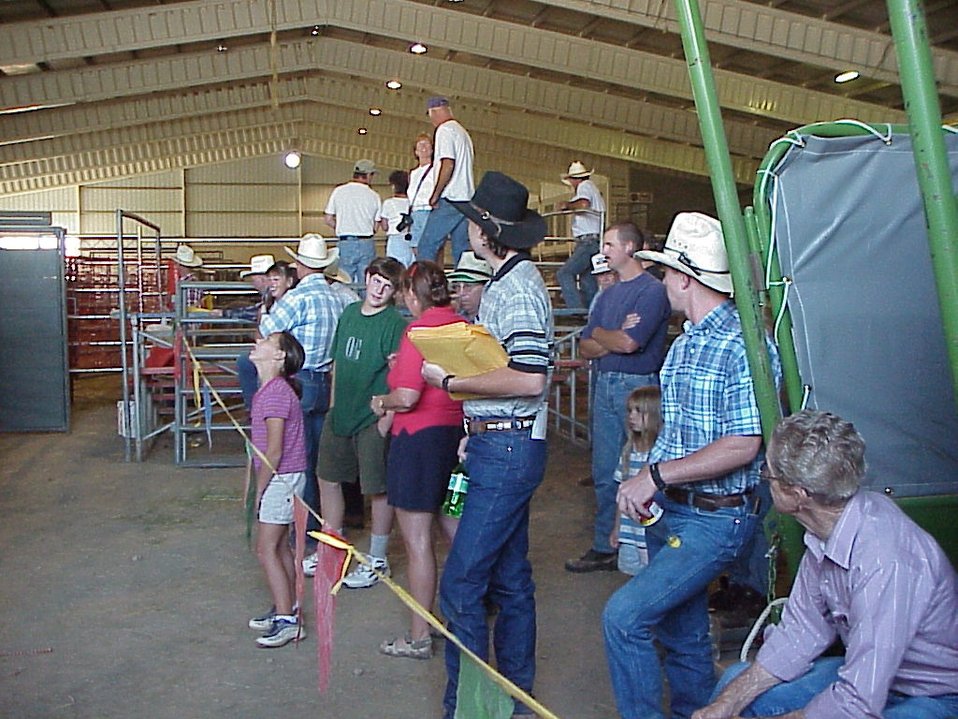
Lewiston Wild Horse and Burro Adoption Program Auction WHB indoor auction Cottonwood Field Office UCSC Upper Columbia Salmon Clearwater District